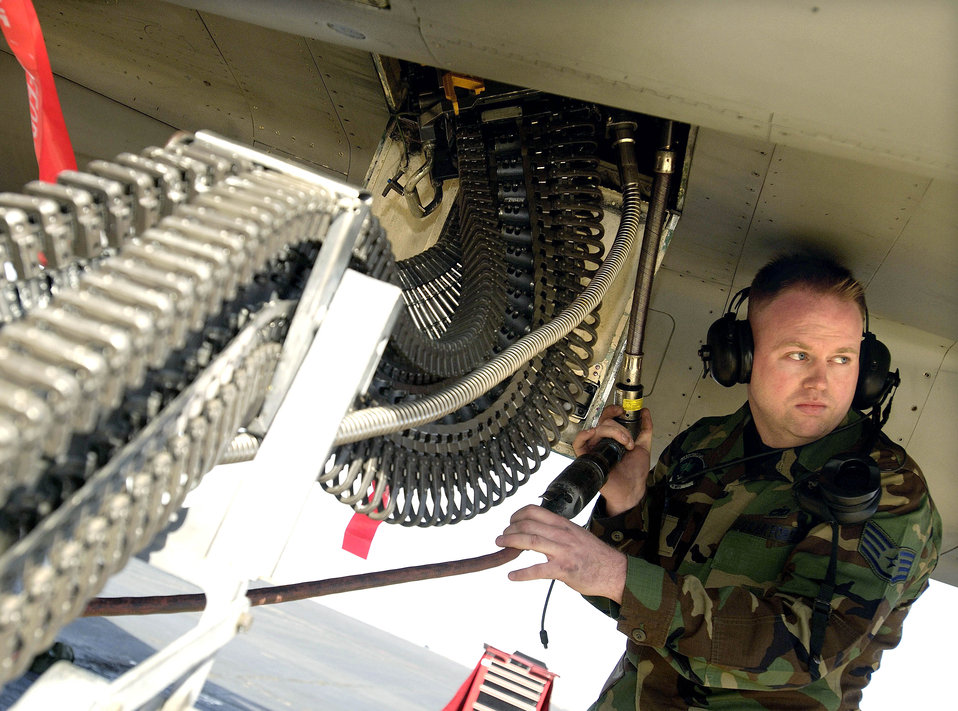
Up to the challenge

LANGLEY AIR FORCE BASE, Va. (AFPN) -- Staff Sgt. Jason Larkins loads ammunition into an F-15 Eagle during the load crew of the year event here in January. The event is part of the 1st Fighter Wing annual load competition and is the first one to include the F-22A Raptor. The 71st Fighter Squadron won the competition. Sergeant Larkins is assigned to the 71st's aircraft maintenance unit.